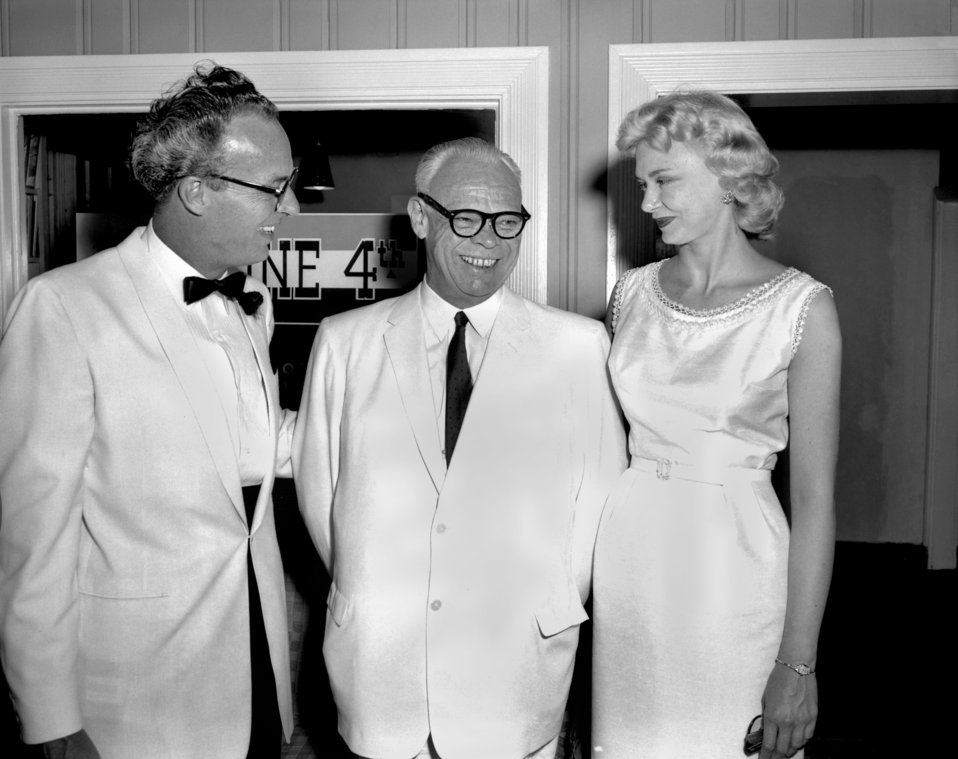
Cowen, DD, Baker Congressman House Oak Ridge

60-0508 DOE photo by Ed Westcott

Independence Day Ceremonies
Oak Ridge Tennessee 6/4/1960